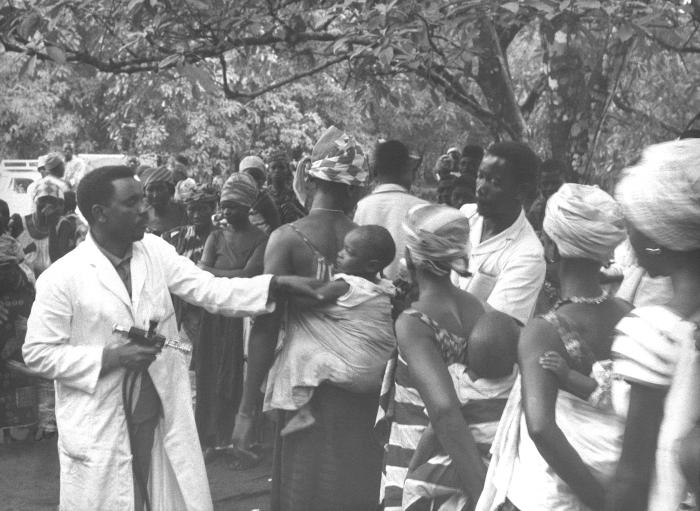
These Nigerians were receiving smallpox vaccinations during the country's 1960s, Smallpox Eradication Program.